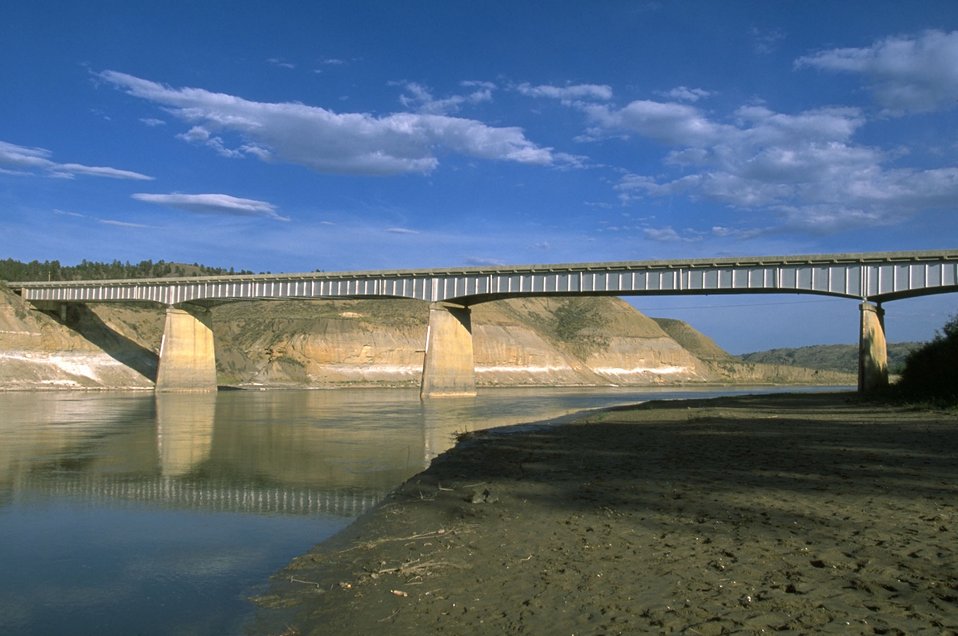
Fred Robinson Bridge over the Missouri River